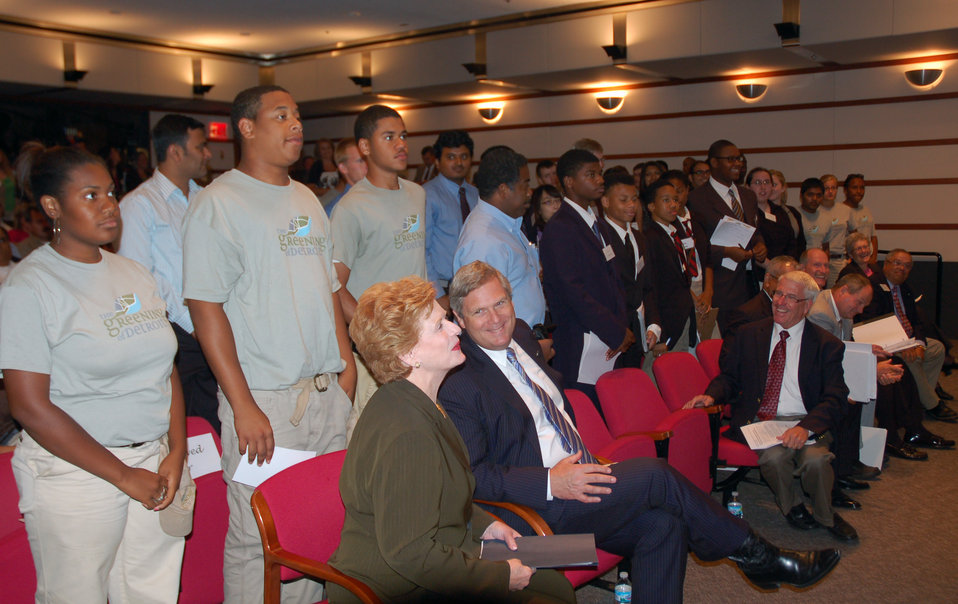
Agriculture Secretary Tom Vilsack sits beside Michigan Senator Debbie Stabenow during his visit to Dearborne, MI on Tuesday, August 7, 2012. Secretary Vilsack was in Michigan to discuss statewide economic growth opportunities in the bio-based manufacturing industry in Michigan.